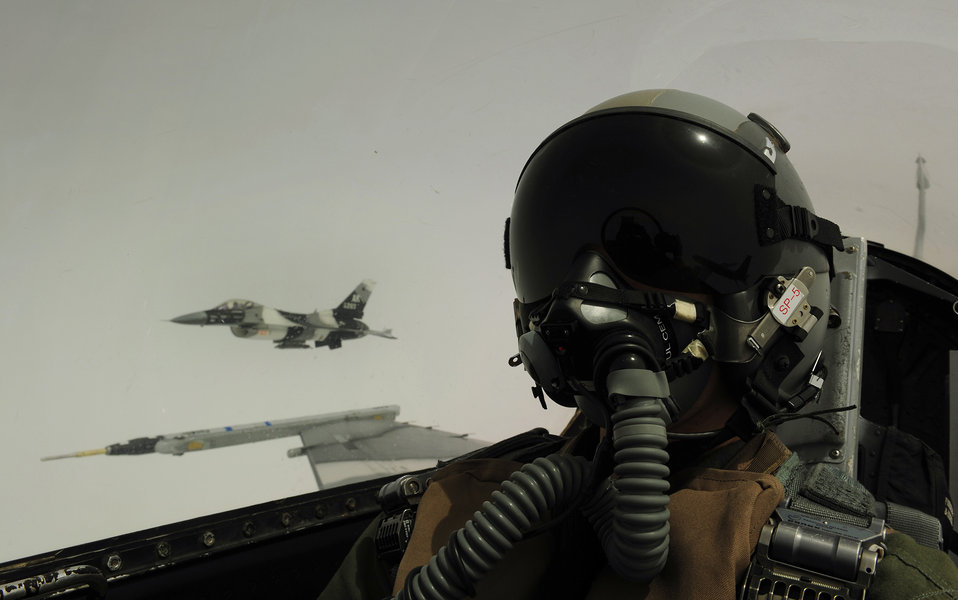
Say cheese

Tech. Sgt. James L. Harper Jr. takes a self-portrait with an F-16 Aggressor in the background during a sortie over Alaskan airspace June 15, 2010, in support of Red Flag-Alaska. Sergeant Harper is with 1st Combat Camera Squadron out of Joint Base Charleston, S.C., and the F-16 is with the 18th Aggressor Squadron at Eielson Air Force Base, Alaska.